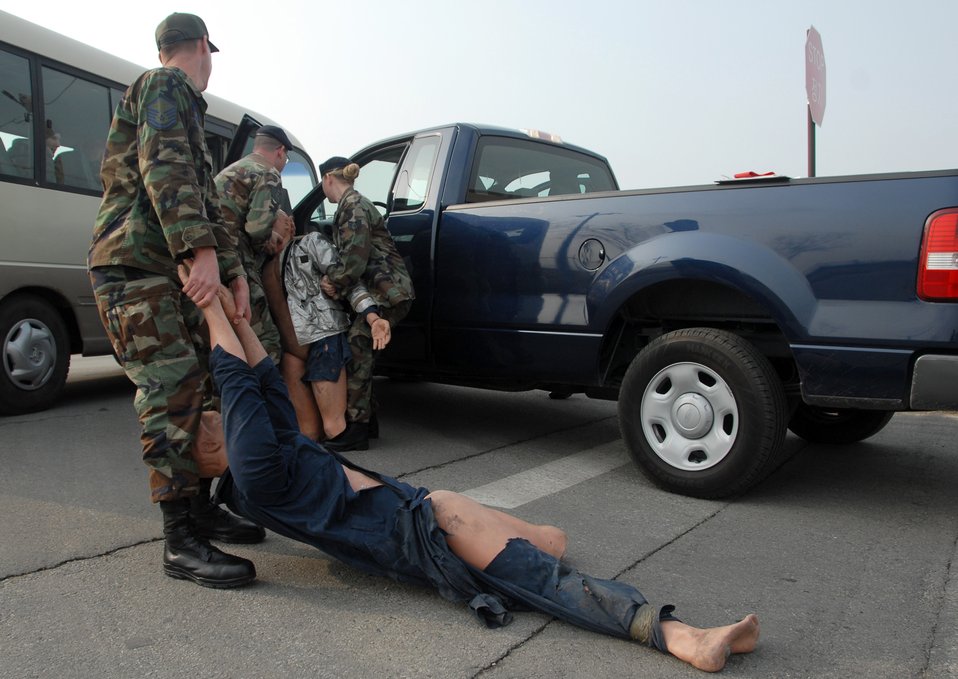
Wolf Pack Warriors

Members of the 8th Fighter wing emergency response evaluation team prepare for a major accident response exercise Feb. 9 on Kunsan Air Base, South Korea. The exercise was designed to provide a realistic training scenario for emergency teams and simulated a major vehicle accident with multiple victims.